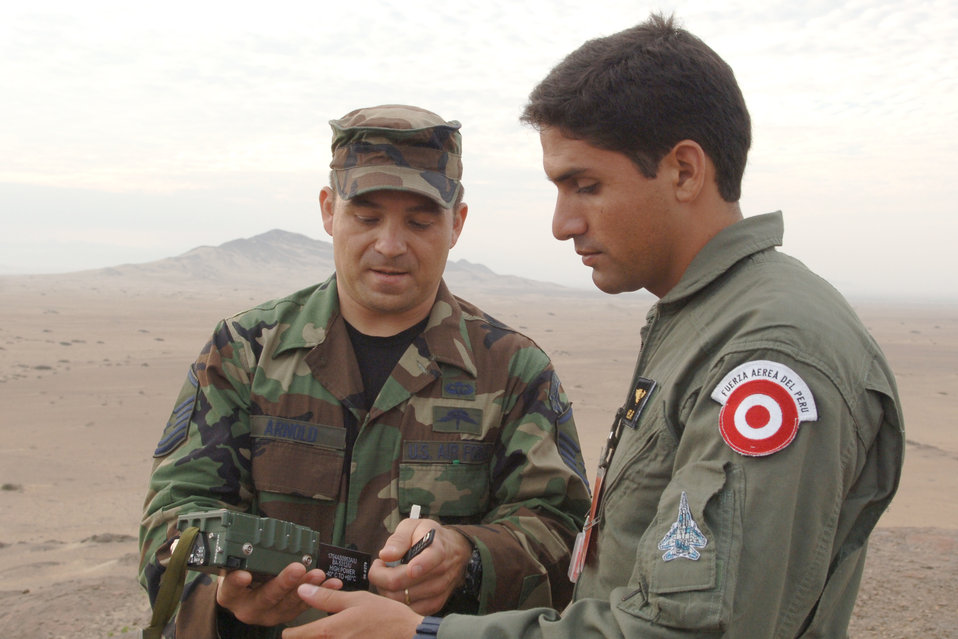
U.S., Peruvian Air Forces reach milestone

Master Sgt. Jesse Arnold goes over operations of a transmitter with a Peruvian pilot during a joint combat search and rescue exercise Feb. 14 near Chiclayo, Peru. The exercise was part of Falcon and Condor 2007, a joint exercise between the U.S. and Peruvian Air Forces. Sergeant Arnold is an Air Force survival, evasion, resistance and escape specialist.